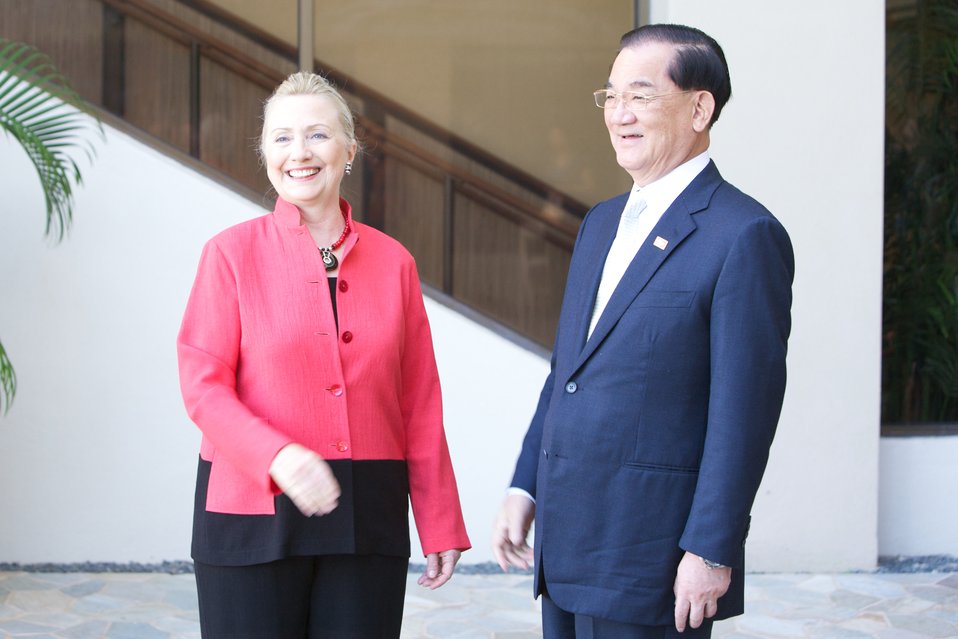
Secretary Clinton Meets With Leader's Representative of Chinese Taipai

U.S. Secretary of State Hillary Rodham Clinton meets with Leader's Representative of Chinese Taipai Dr. Lien Chan on the sidelines of APEC in Honolulu, Hawaii, on November 12, 2011.